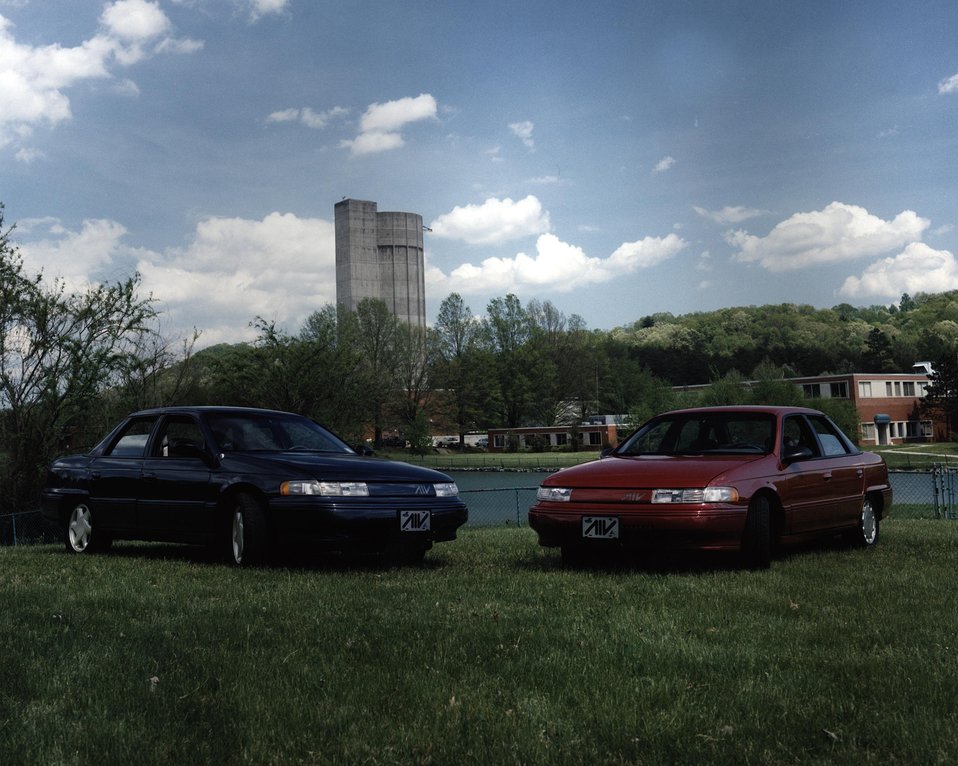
PROTOTYPE ALUMINUM INTENSIVE VEHICLES, (AIV).

ORNL IS THE SITE OF MUCH OF THE RESEARCH TO DEVELOP CARS OF THE FUTURE THROUGH THE PARTNERSHIP FOR A NEW GENERATION OF VEHICLES. PNGV IS A PARTNERSHIP BETWEEN THE U.S. GOVT. AND THE U.S. COUNCIL FOR AUTOMOTIVE RESEARCH, REPRESENTING FORD, CHRYSLER AND GENERAL MOTORS. THE EFFORTS INCLUDE DEVELOPING COST EFFECTIVE MASS PRODUCTION TECHNOLOGY REDUCING AUTOMOBILE WEIGHT USING ALUMINUM, IMPROVING FUEL EFFICIENCY AND LOWERING ADMISSIONS.